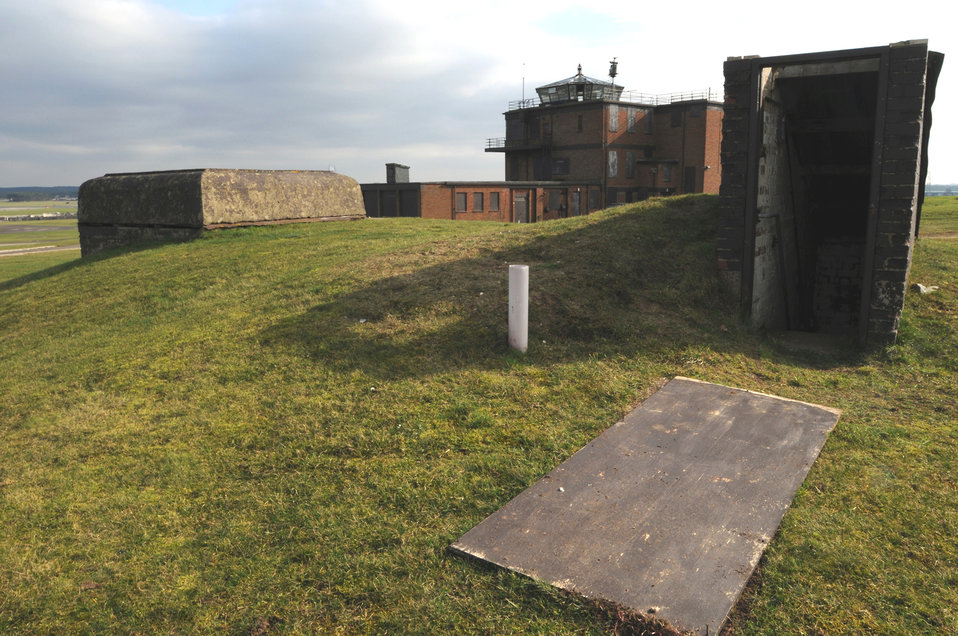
Leakenheath tower falling down

Two structures from two different eras sit next to each other near the RAF Lakenheath flightline Feb. 27. The command bunker in the foreground was used by commanders during World War II to defend the airfield against German Paratroopers. The control tower in the background is a relic of the Cold War Era and was used from 1948 through 1992, it's scheduled to be demolished.